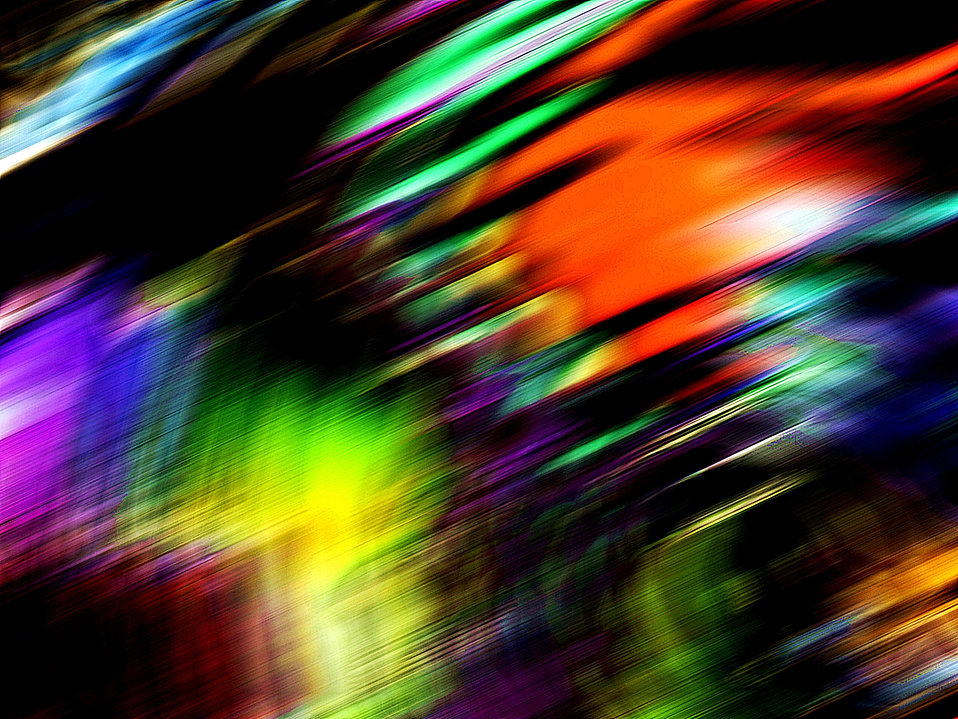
Interweaving with the wind .....

Background.